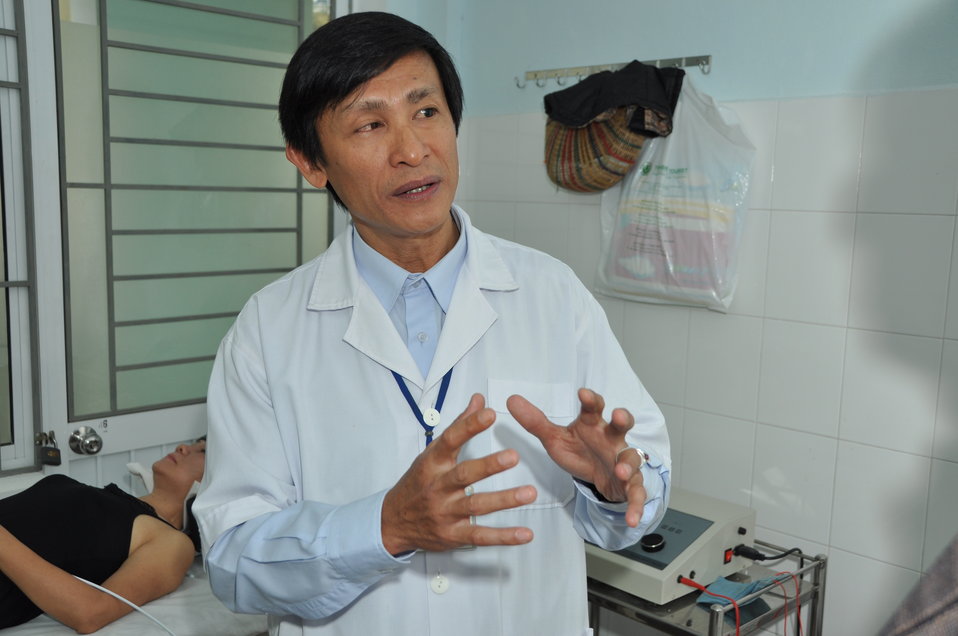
Dr. Pham Minh Hieu at Thanh Khe District Hospital

USAID-supported equipment and training help the staff at Thanh Khe District Hospital to meet the physical therapy needs of the disabled population of Danang.